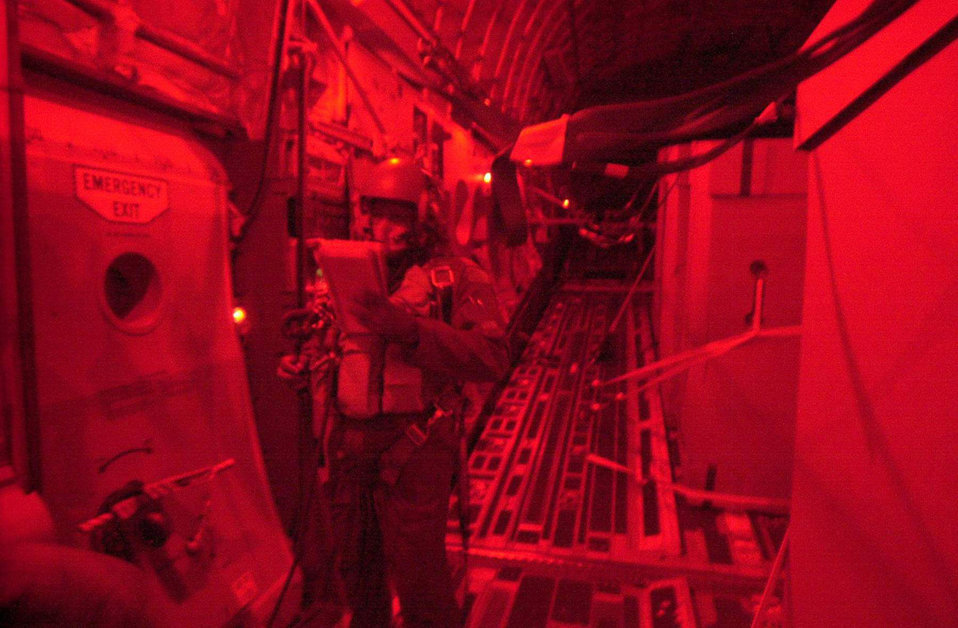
Drop Check

OPERATION ENDURING FREEDOM --